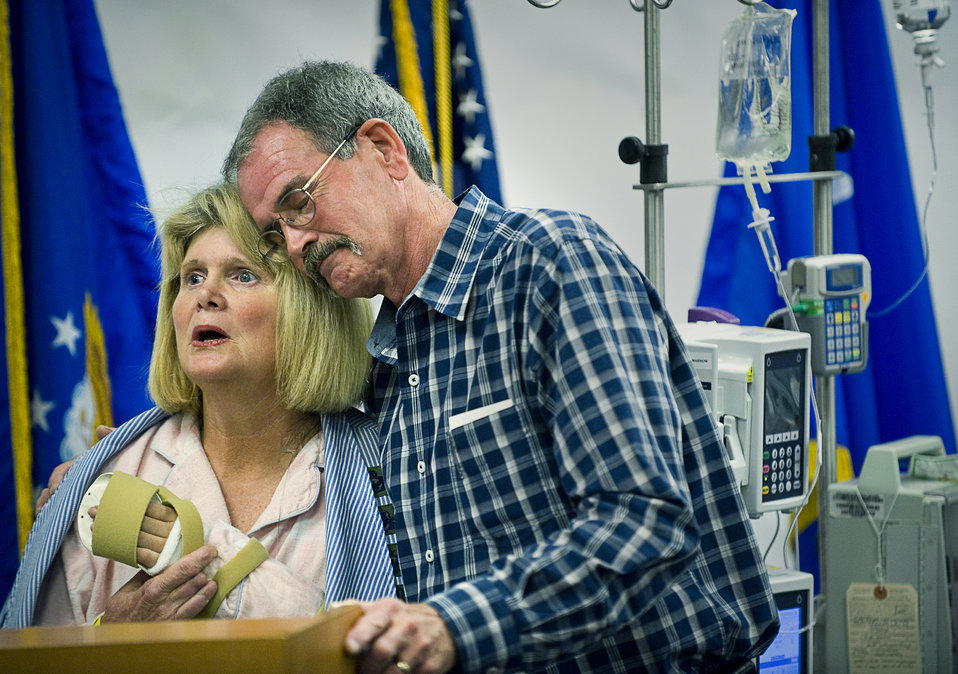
Doctors perform first hand transplant in DOD

Dan McWilliams comforts his wife retired Master Sgt. Janet McWilliams during a press conference about her hand transplant March 3, 2010, at the Wilford Hall Medical Center, Texas. Sergeant McWilliams is the 10th person in the U.S. to undergo this procedure.